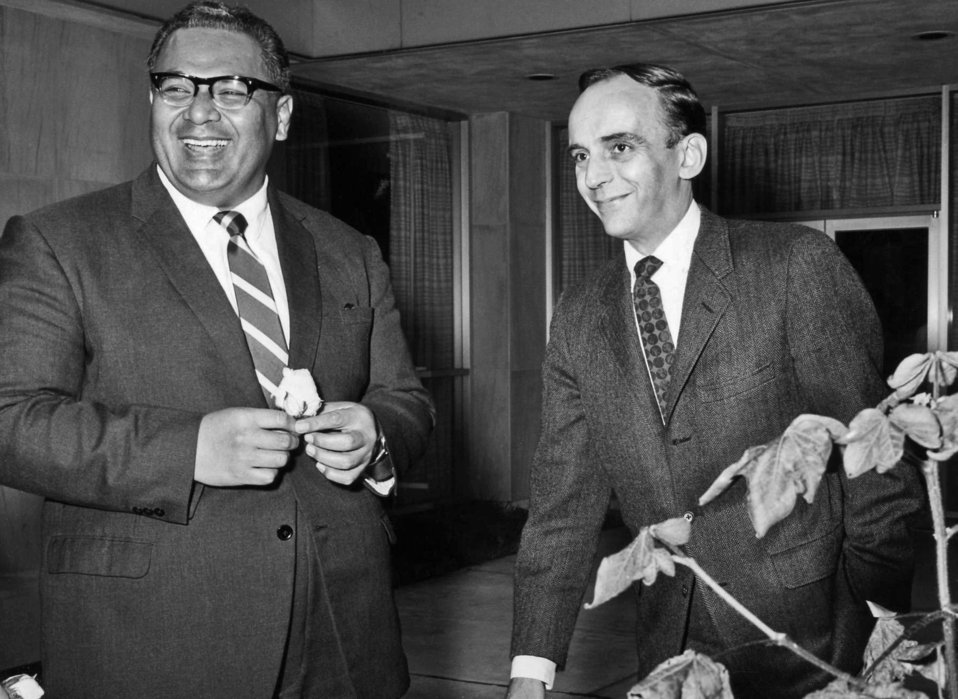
This 1967 photograph shows then Centers for Disease Control Director, David J. Sencer, M.D., M.P.H., (1966-1977) (right), meeting with the Prince of Tonga, Prince Tu'ipelehake.